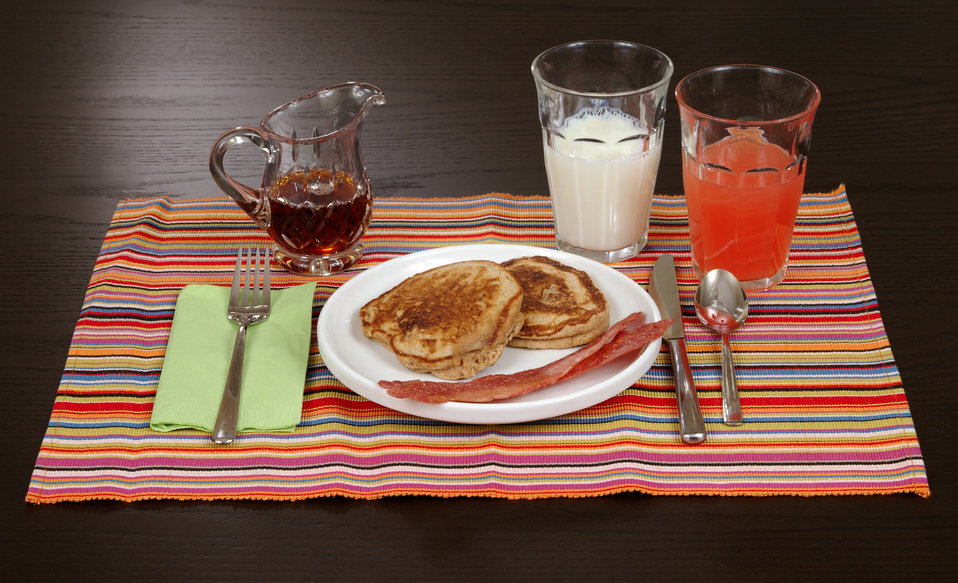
Here we see a simple breakfast including a glass of low-fat milk, a glass of grapefruit juice, what appears to be two, small whole wheat pancakes, two stripes of very lean turkey bacon, and sugar-free maple syrup. Though just as tasty, this breakfast would have been much greater in its calorie density if the alternative ingredients would have been selected such as whole milk, pancakes made with enriched flour, pork bacon, and whole maple syrup.